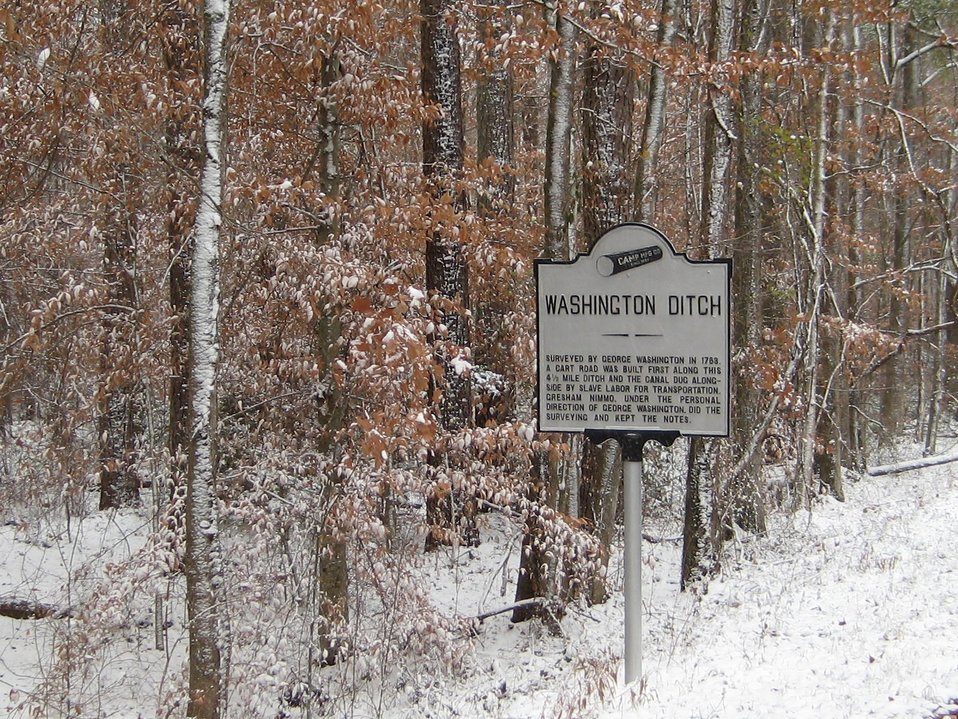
Washington Ditch

Great Dismal Swamp National Wildlife Refuge, VA.